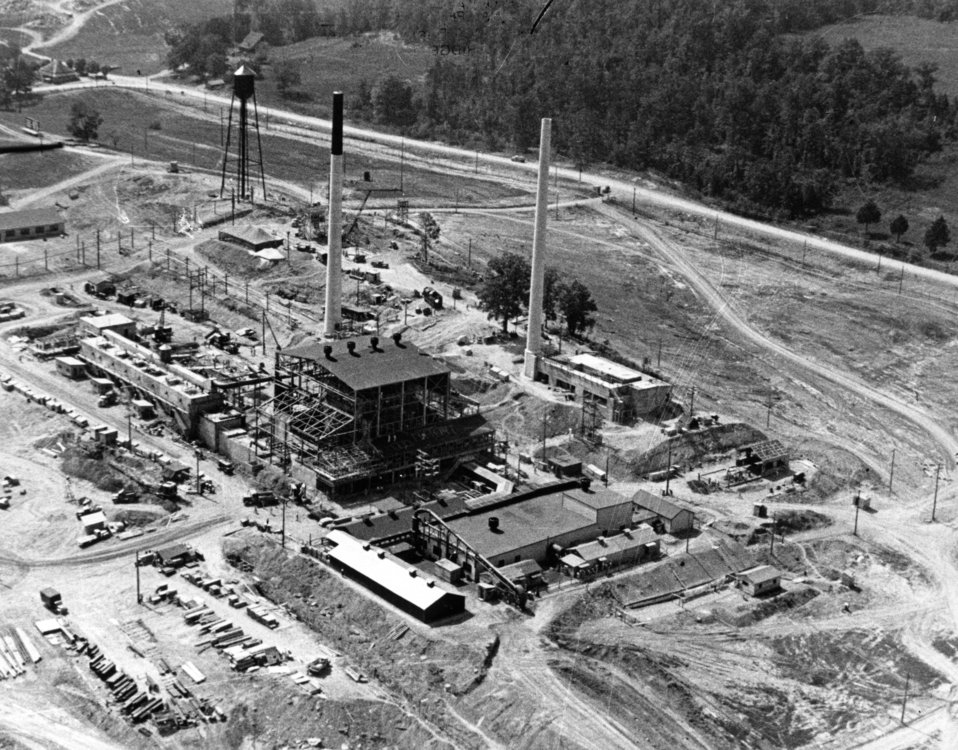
X-10 at Oak Ridge